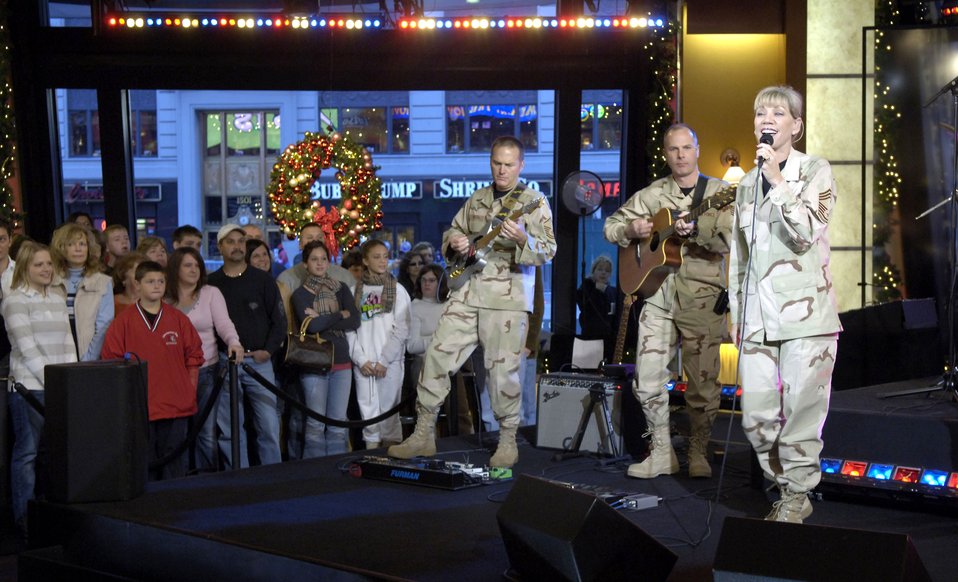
Good Morning America

The U.S. Air Force Academy Band,